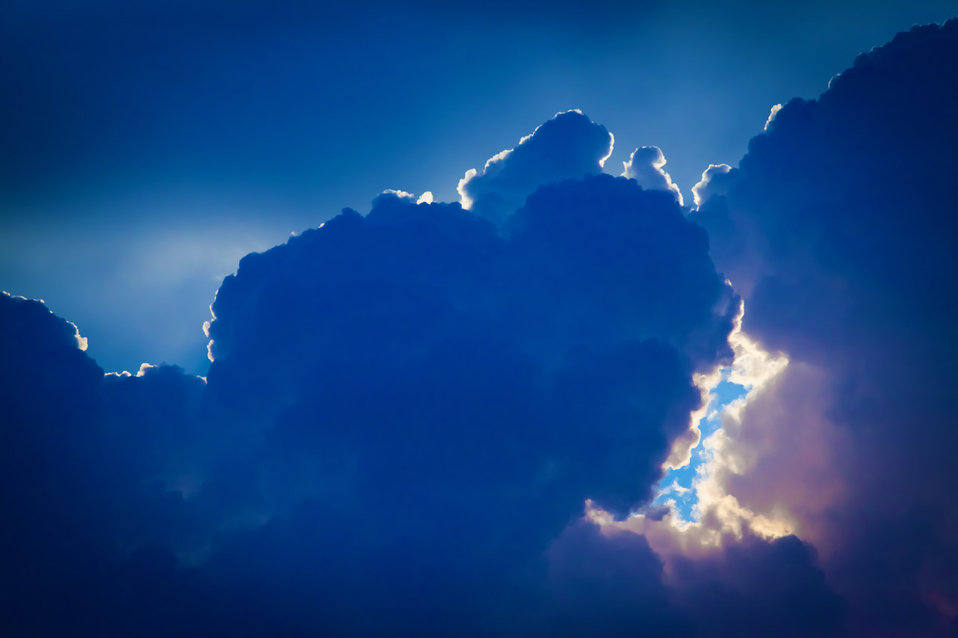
Dramatic blue clouds background.